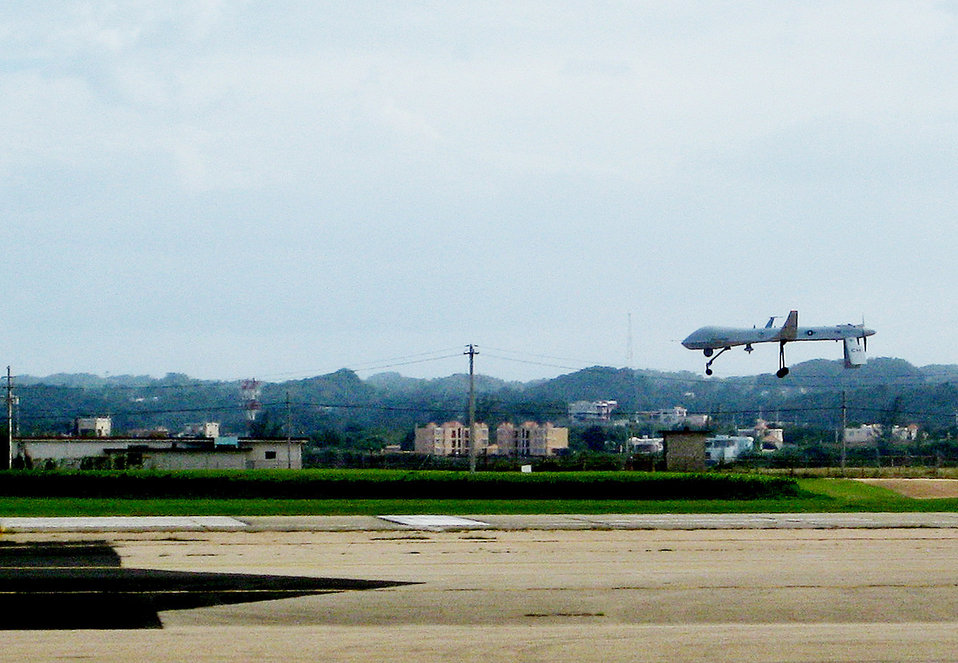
Haiti Earthquake Relief

An RQ-1 Predator lands at Aeropuerto Rafael Hernandez Jan. 27, 2010, outside Aguadilla, Puerto Rico. The remotely piloted aircraft are operating out of Puerto Rico in support of Operation Unified Response in Haiti. Airmen from Creech Air Force Base, Nev., are providing 24-hour-a-day full-motion video in real-time to international relief workers on the ground in order to speed humanitarian aid to remote and cut-off areas of the country following the earthquake Jan. 12, 2010.